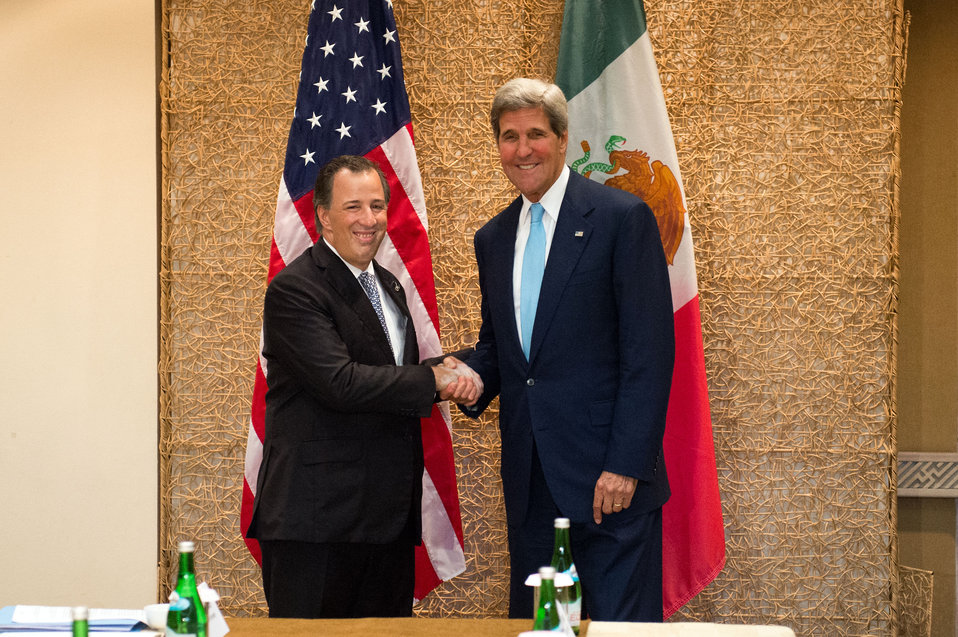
Secretary Kerry Greets Mexican Secretary of Foreign Affairs José Antonio Meade Kuribreña

U.S. Secretary of State John Kerry greets Mexico's Secretary of Foreign Affairs José Antonio Meade Kuribreña before their bilateral meeting in Bali, Indonesia, on October 7, 2013.